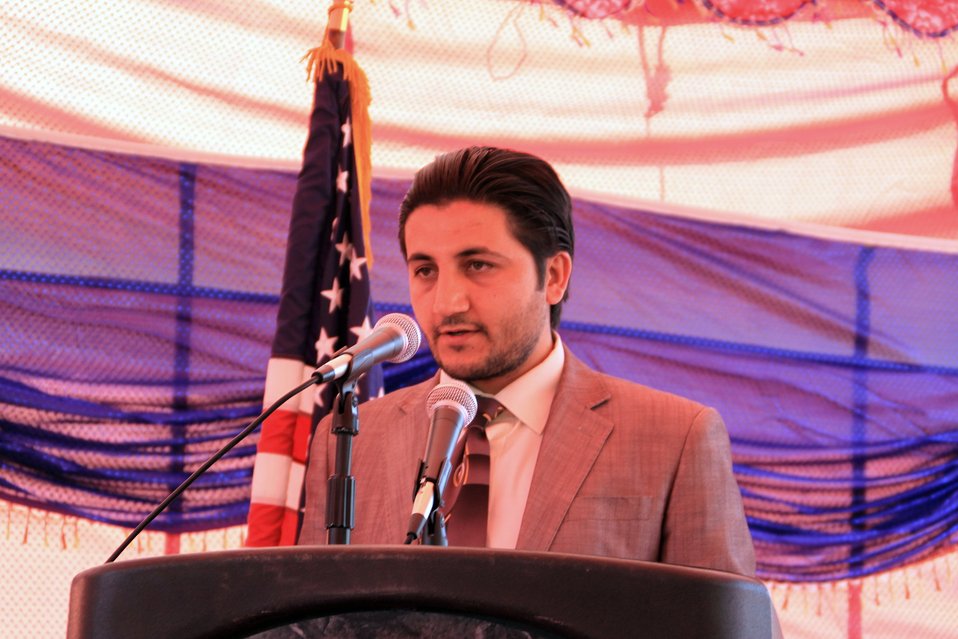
Badam Bagh Farm